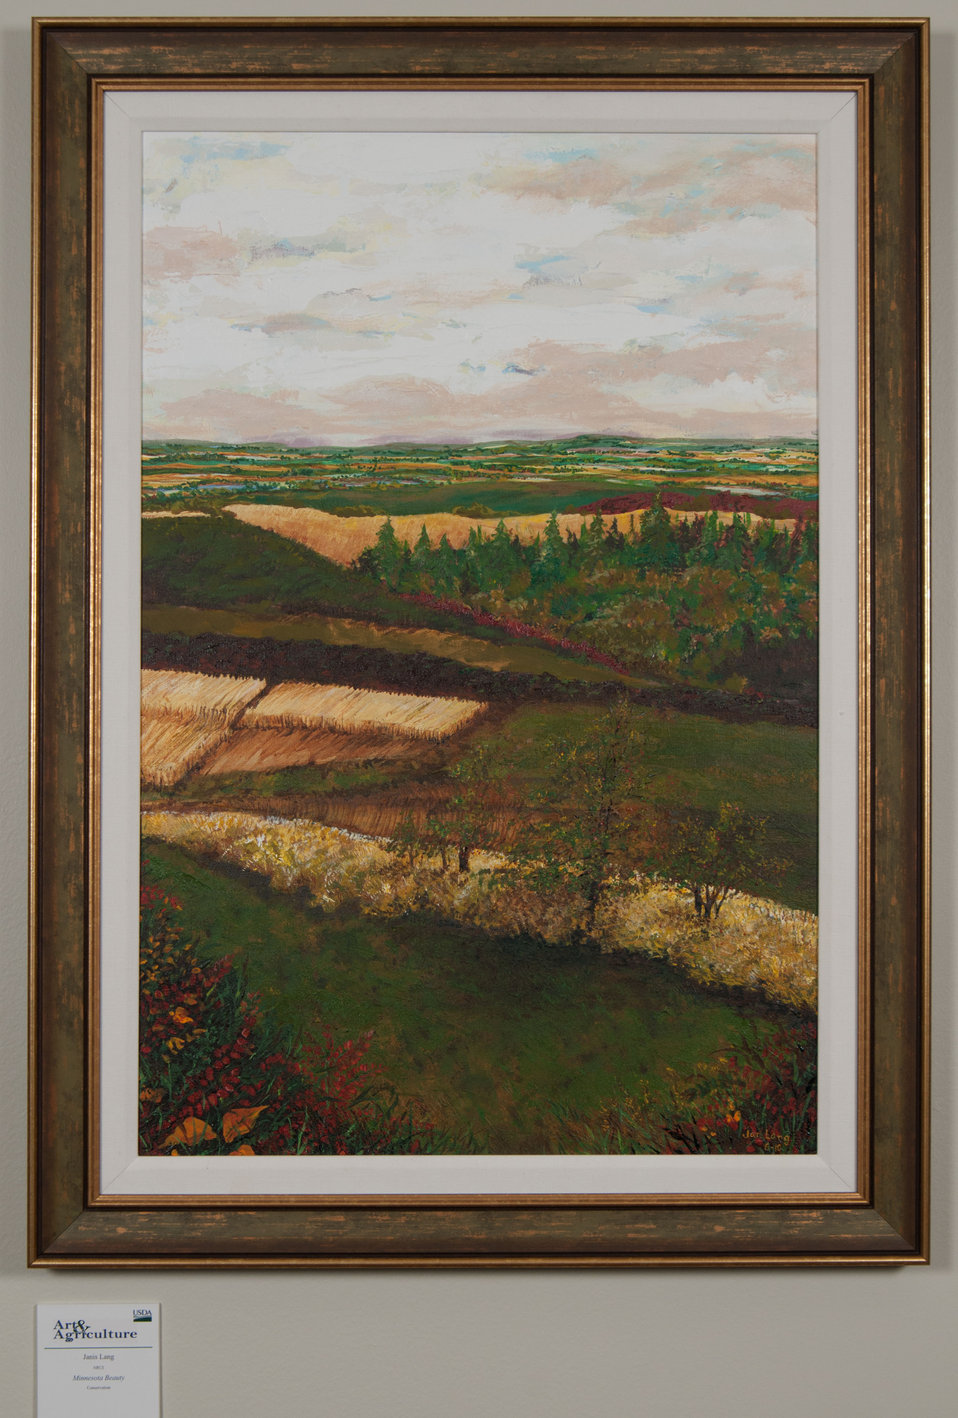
Online Viewer's Choice entries of the 2013 Art & Agriculture, Tuesday, July 9, 2013, in the South Building, Washington, D.C. Themes were expressed by employees from across the department and the contest was open to full-time and part-time USDA employees. Winning artwork will be displayed till the end of the year. U.S. Artistic expression is a creative outlet that is vital for an individual to grow and develop.